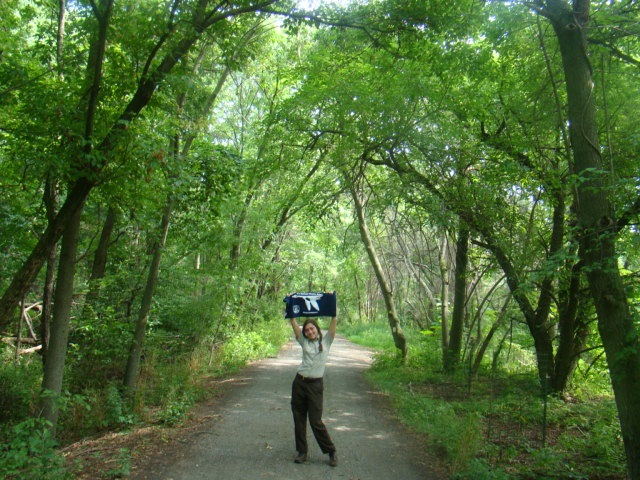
Get Your Goose On!

GYGO! at John Heinz National Wildlife Refuge.